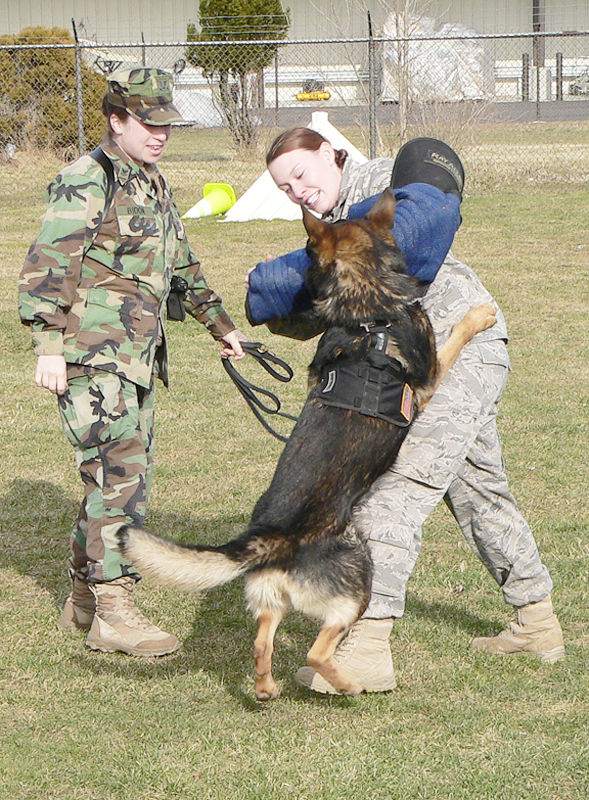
A dog's life at McGuire

At Joint Base McGuire-Dix-Lakehurst, N.J., Senior Airman Allison Price, leads a dog in a controlled aggression exercise Jan. 5, 2010. Department of Defense military working dogs receive initial training at Lackland Air Force Base, Texas, but handlers must provide continuous training to ensure the dogs stay sharp. Airman Price is a dog handler with the 87th Security Forces Squadron.